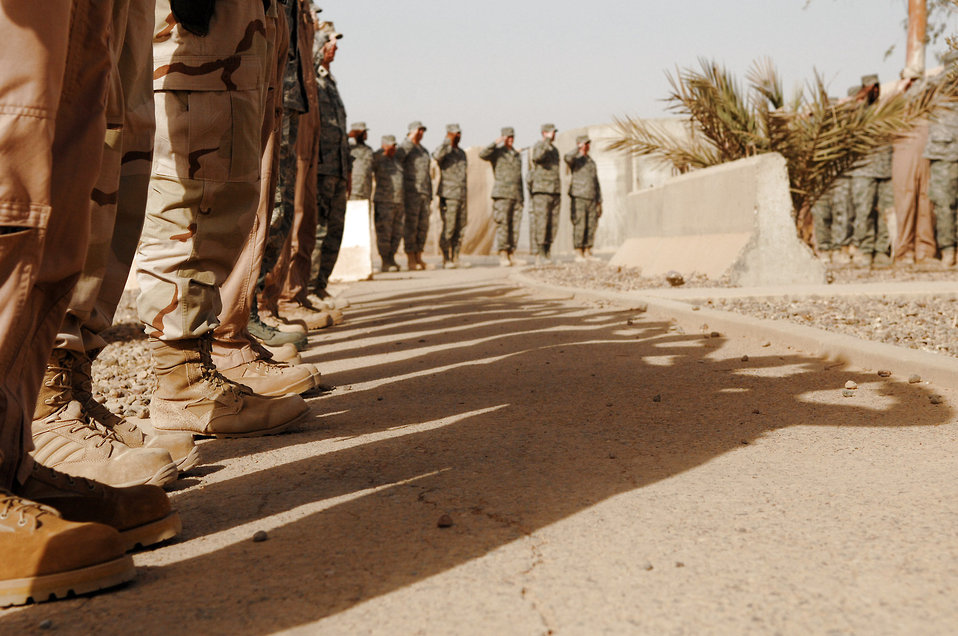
Muster at Balad Air Base

In a Memorial Day ceremony at Balad Air Base, Iraq, the 332nd Air Expeditionary Wing paid observance to the 44 Airmen from the wing who have died in the war on terror since 2003.